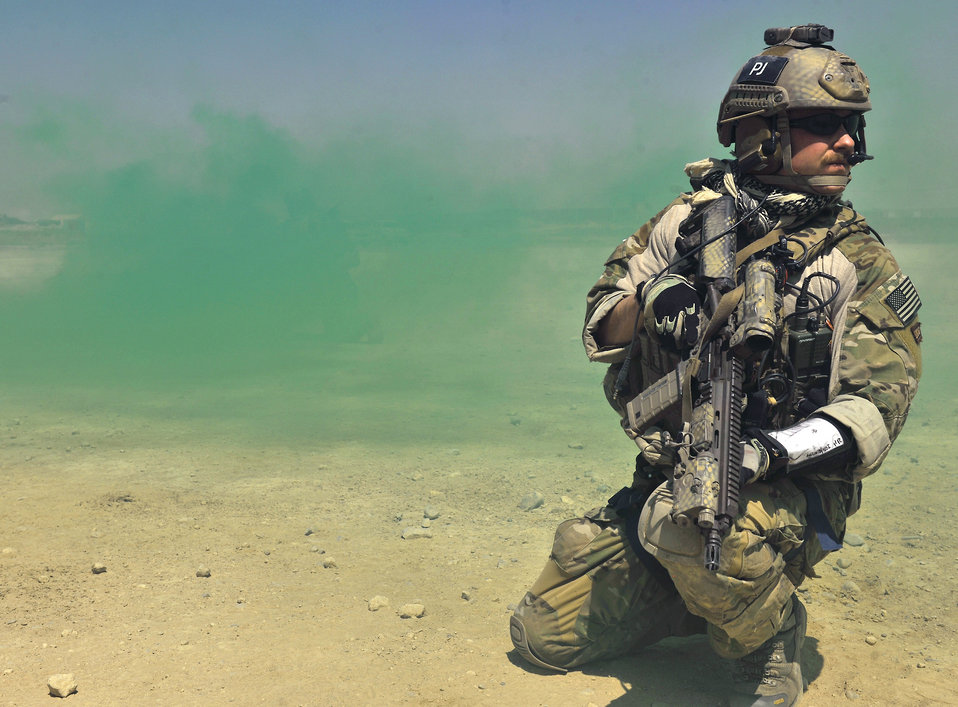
It's all green here

A pararescueman secures a sector of the landing zone before assisting